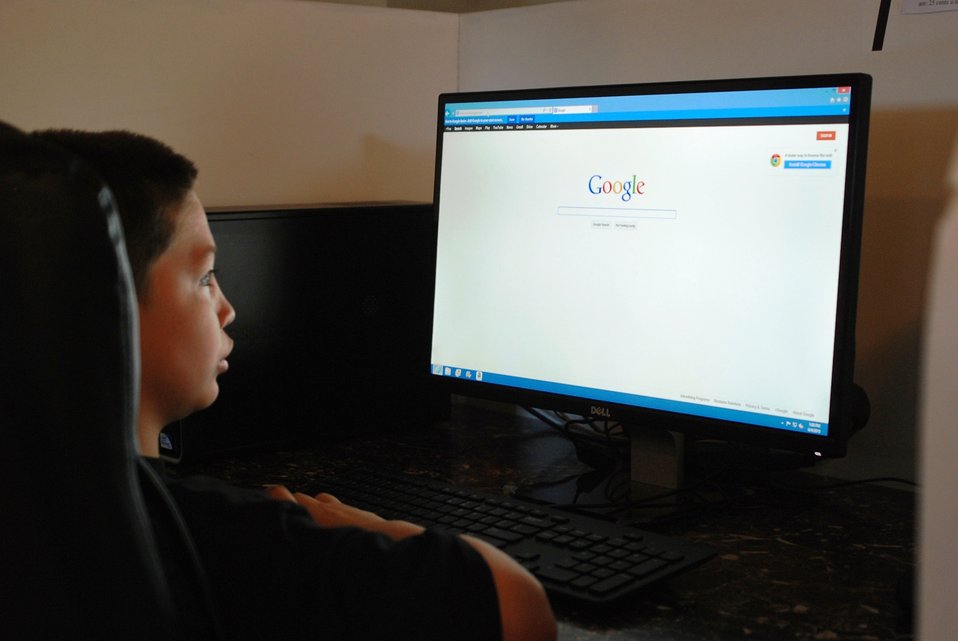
20130604 Stafford Ohio Community Connect youth computer

Students and residents of Stafford will have free access to broadband under the provisions of a U.S. Department of Agriculture (USDA) Rural Development (RD) Community Connect grant.